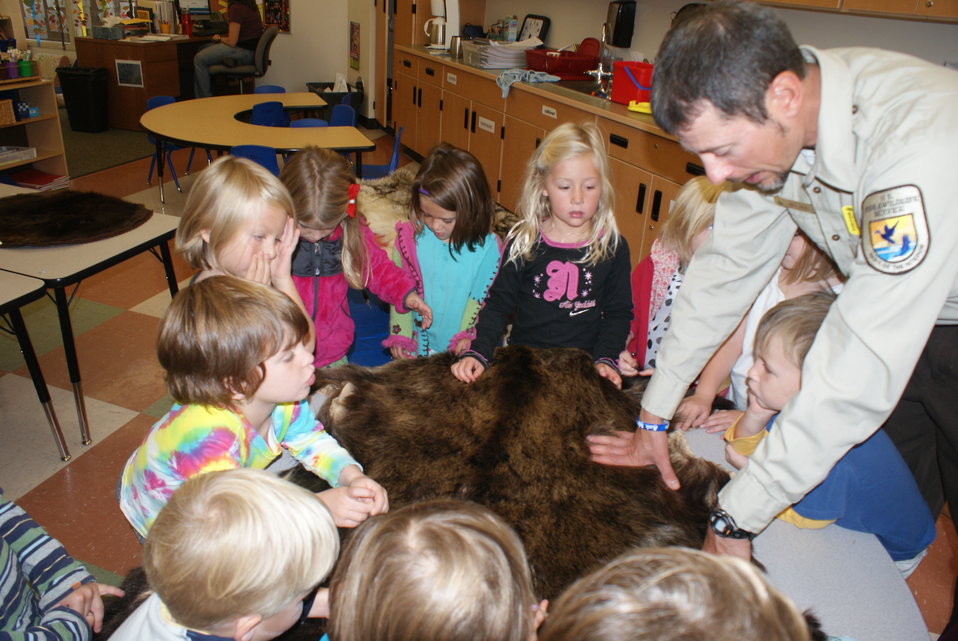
Scientists in the Community Program

U.S. Fish and Wildlife Service Mountain-Prairie Region Deputy ARD for External Affairs, Matt Kales, introduces early childhood education students at William Roberts Elementary School in Denver to some of Colorado's native and historic wildlife species.